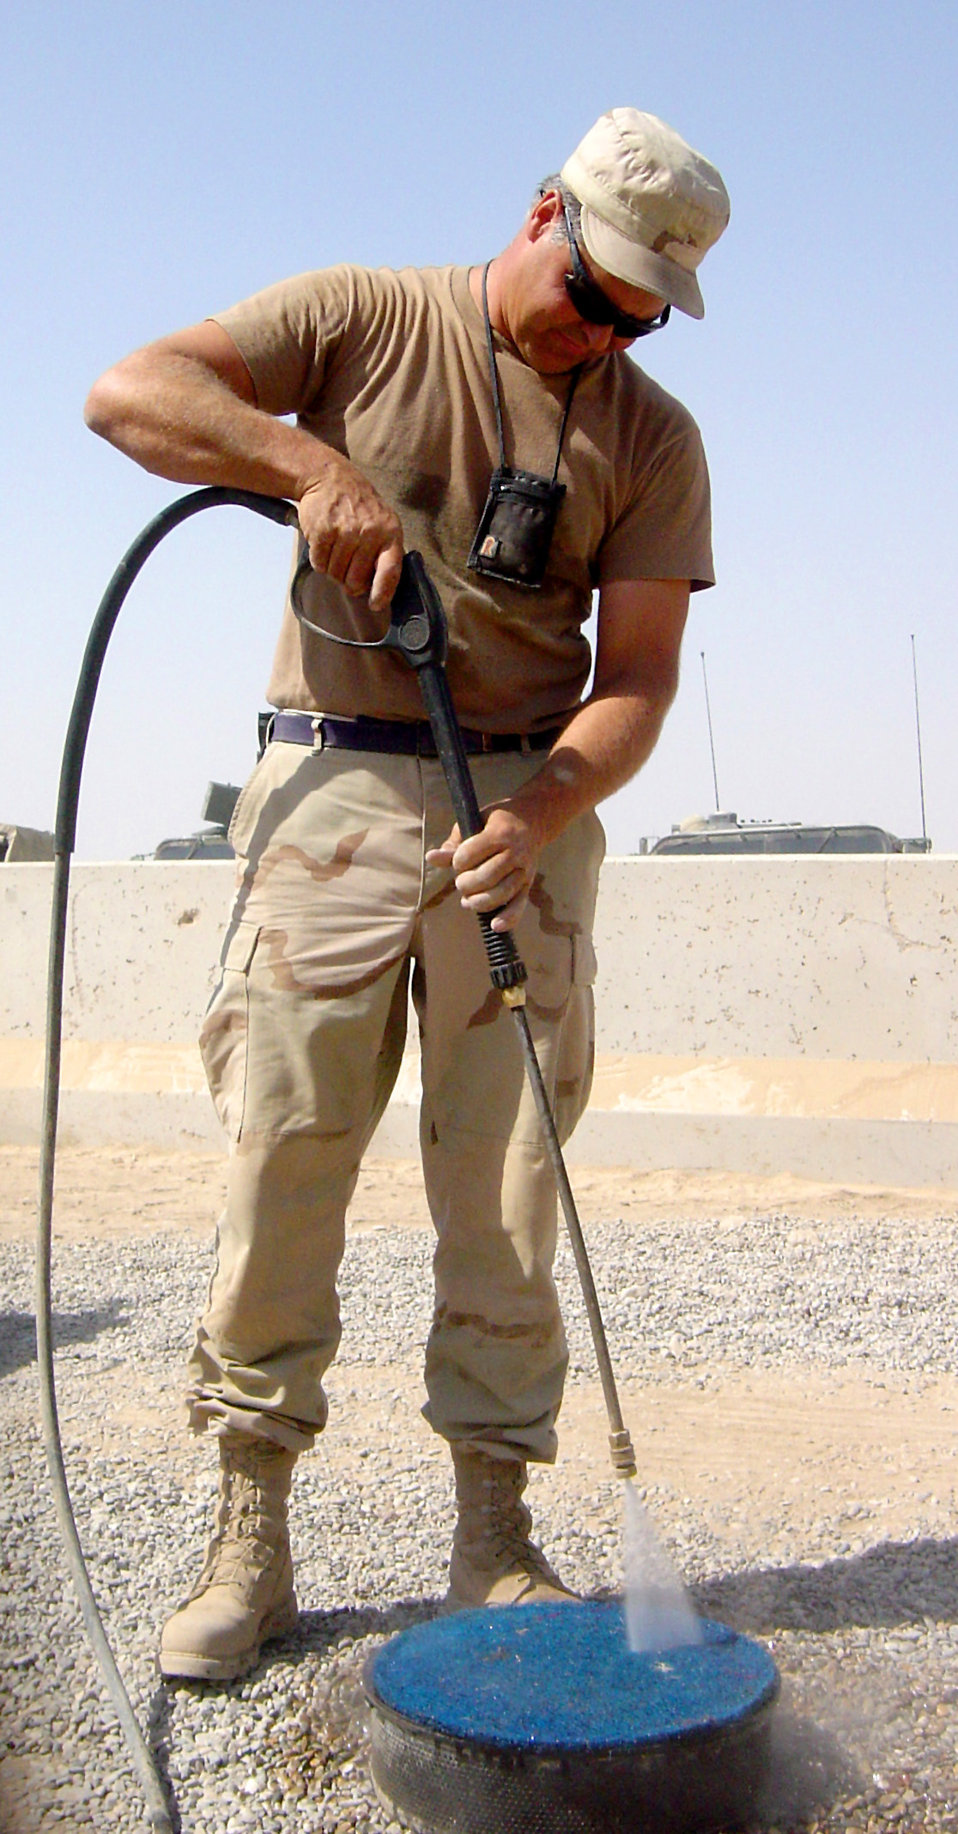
Filter cleaning

KIRKUK AIR BASE, Iraq -- Tech. Sgt. Joseph Brown cleans an air conditioner filter in the tent city here. The heating, ventilation and air-conditioning team services more than 300 air conditioners every other week to ensure base residents have a comfortable sleeping environment. Brown is assigned to the 506th Expeditionary Civil Engineer Squadron.